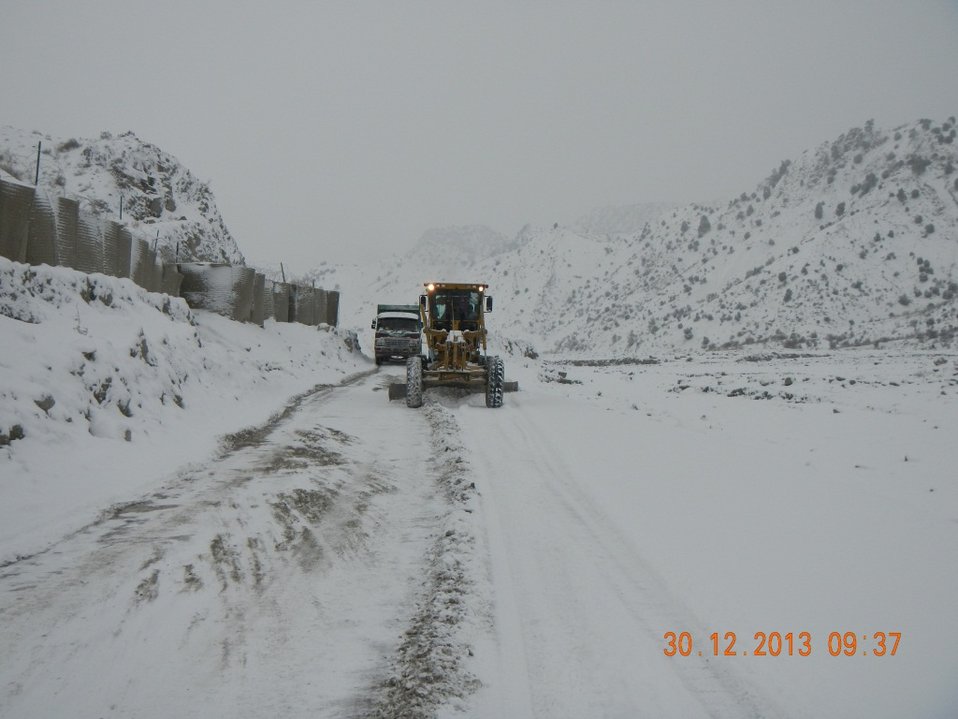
Snow removal work on the Gardez Khost road